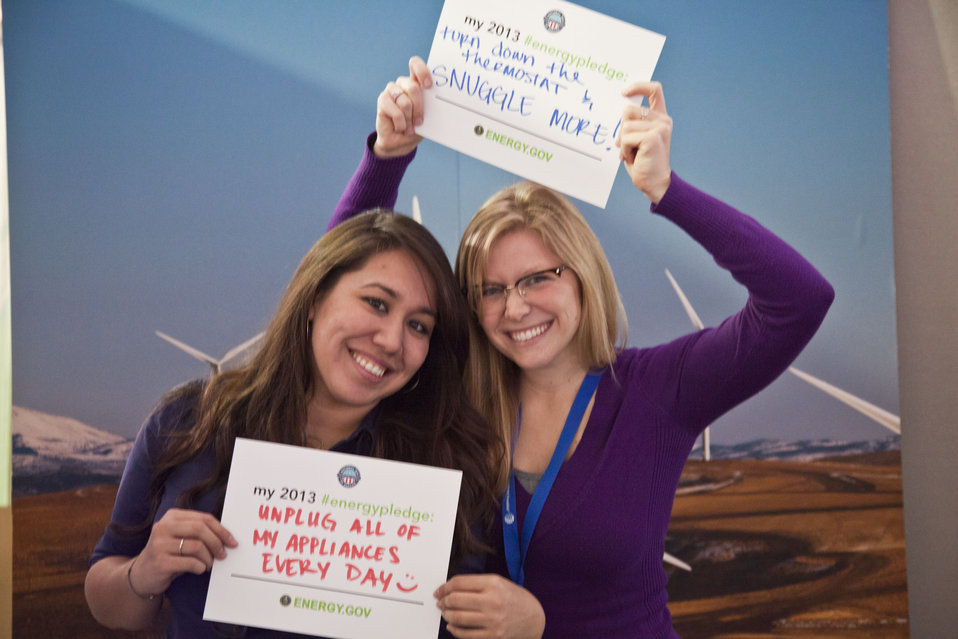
What's your #energypledge?